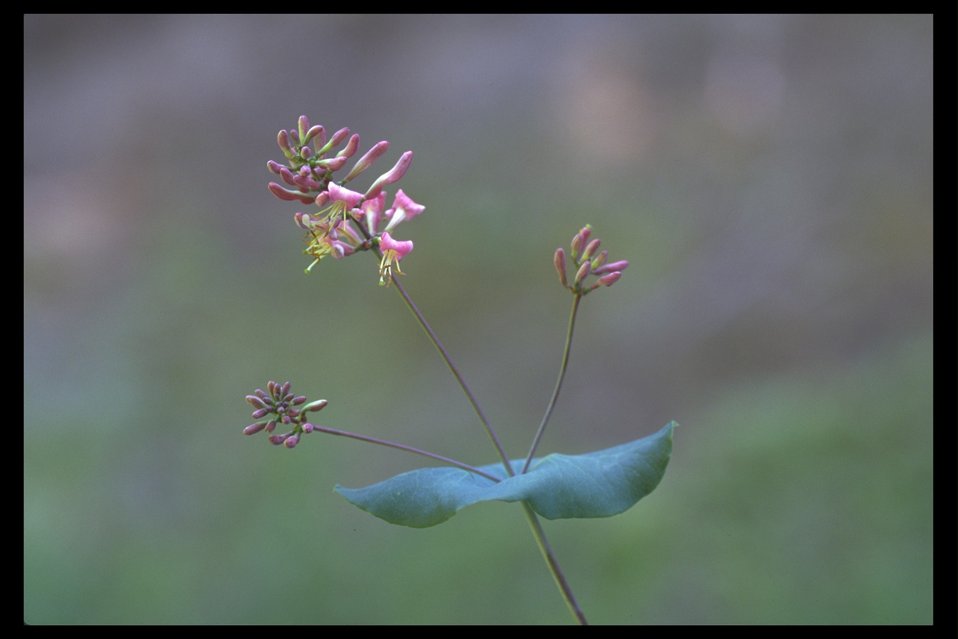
Hairy Honeysuckle, also called California Honeysuckle, (Lonicera hispidula var. vacillans) located along Upper Trail Creek.